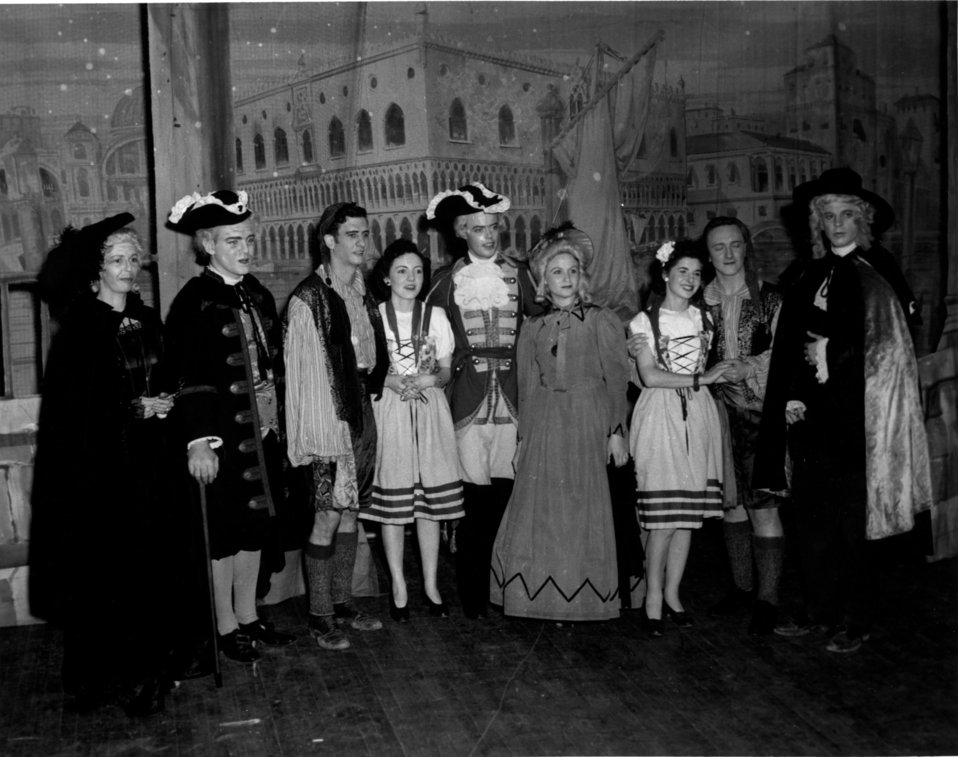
Recreation at Oak Ridge